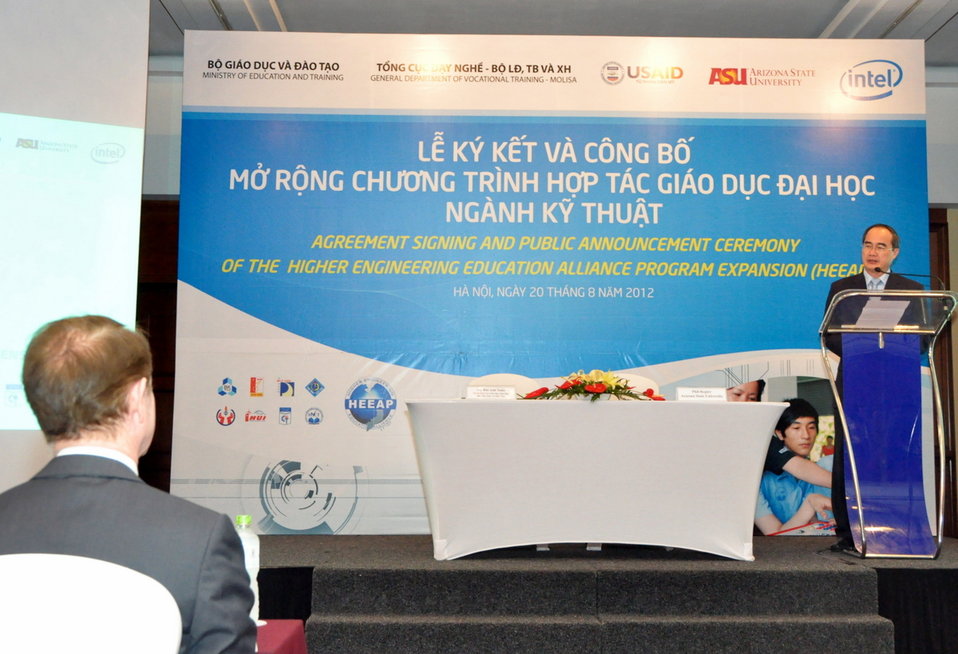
Vietnam's Deputy Prime Minister Nguyen Thien Nhan Addresses the Higher Engineering Education Alliance Program Expansion Launch

Hanoi, August 20, 2012.